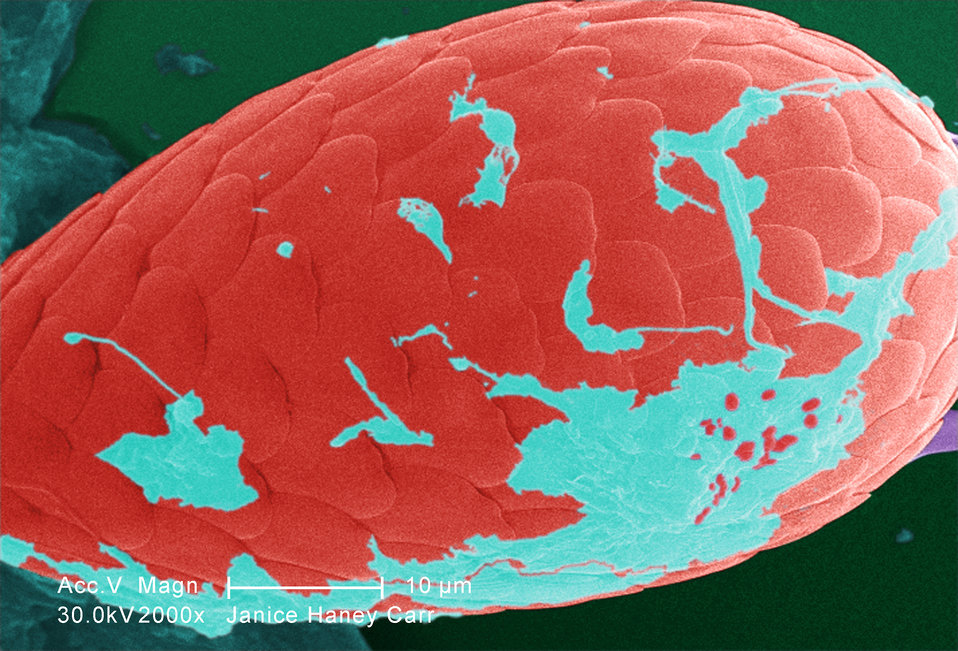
Under a moderate magnification of 2000X, this digitally-colorized scanning electron micrograph (SEM) of an untreated water specimen extracted from a wild stream mainly used to control flooding during inclement weather, revealed the presence of unidentified organisms, which included bacteria, protozoa, and algae. In this particular view, a single copepod-like microorganism was seen occupying the field of view, which seemed to be encased in an outer shell of armour-like plates, or scales. If you look closely, you'll also notice the small grouping of bacteria, which had become enmeshed in a patch of biofilm on the dorsal surface of this creature's carapace.